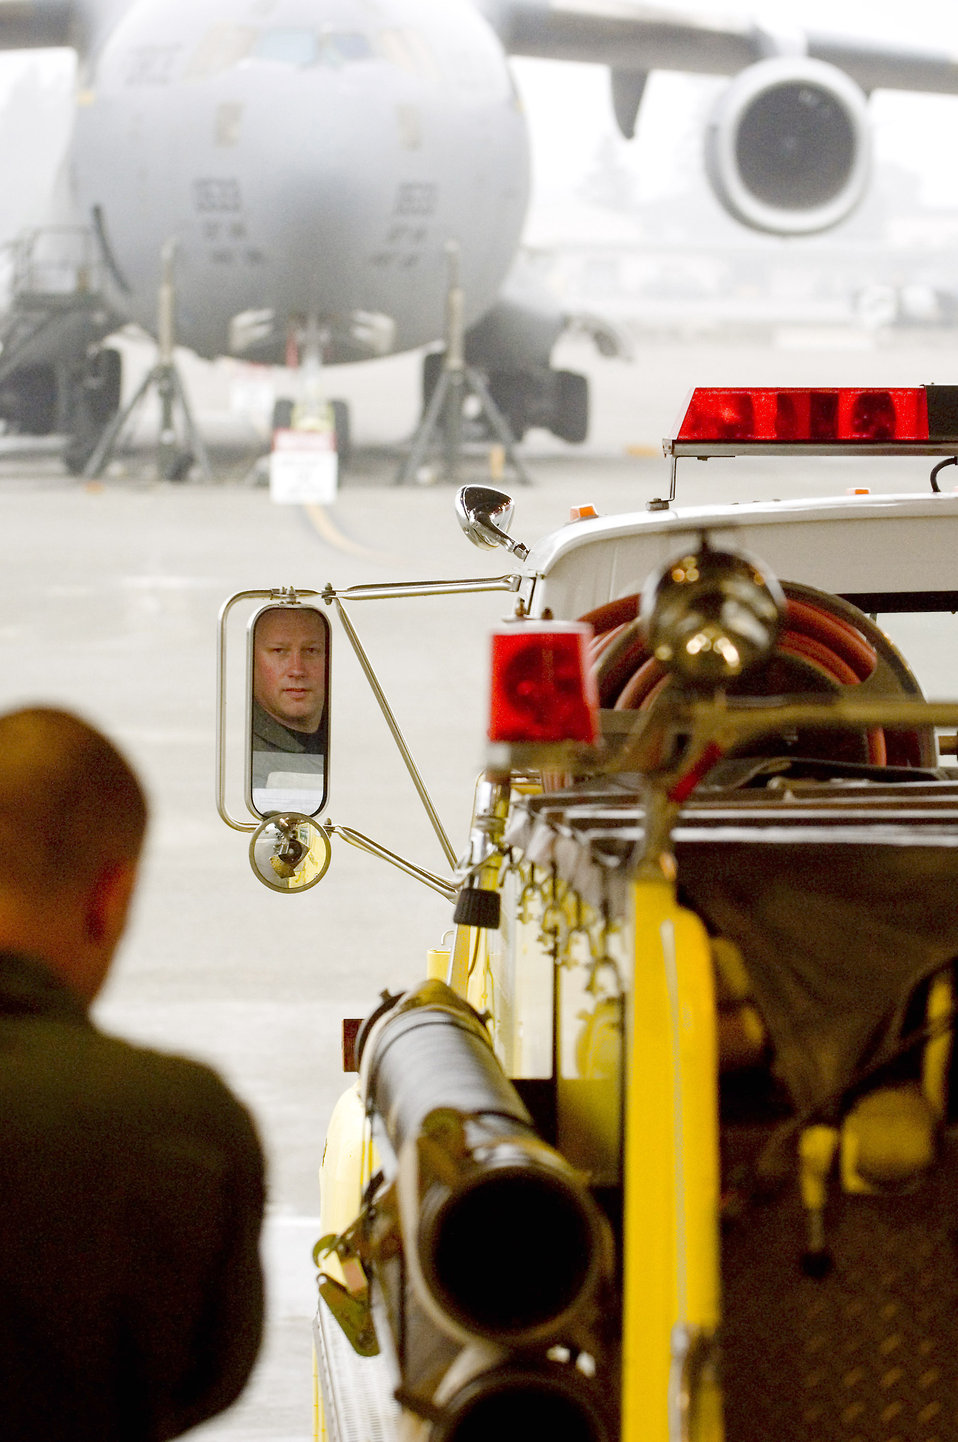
Hola bomberos

Tech. Sgt. Lance Nelson uses his rearview mirror to watch Senior Airman Pete Olsufka marshall him onto a C-17 Globemaster III Sept. 19 at McChord Air Force Base, Wash. The 728th Airlift Squadron loadmasters are two aircrew members assigned to a humanitarian mission heading to Mexico. Through the Denton Amendment, three local Washington non-profit agencies worked with the 446th Airlift Wing to take a firetruck and pallets of rescue equipment to a small village outside of Guadalajara, Mexico.